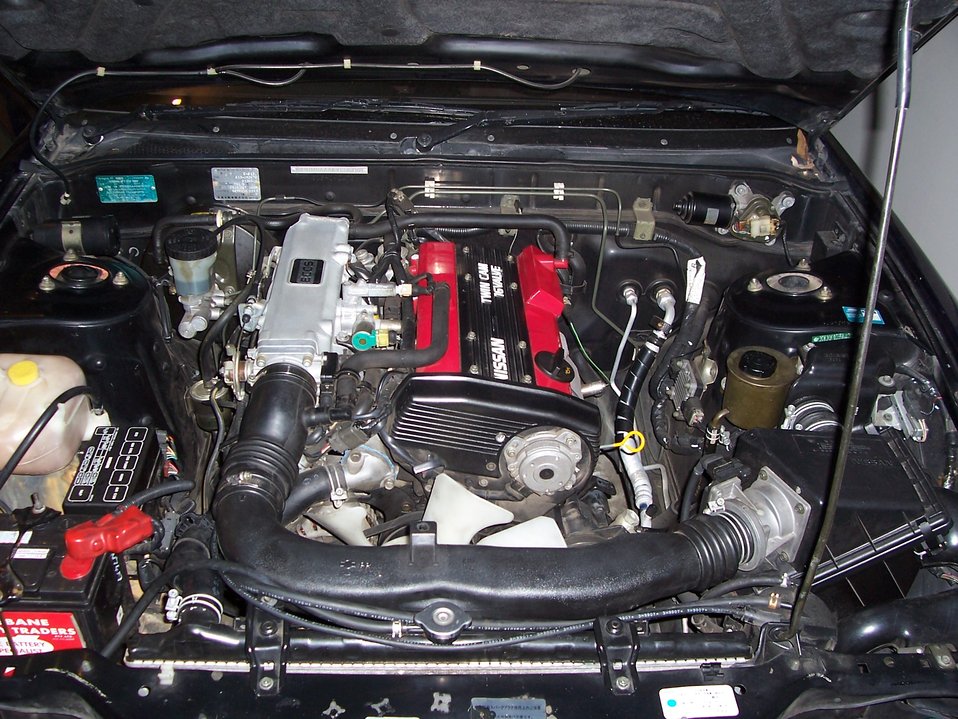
CA18DE, Nissan S13 Silvia